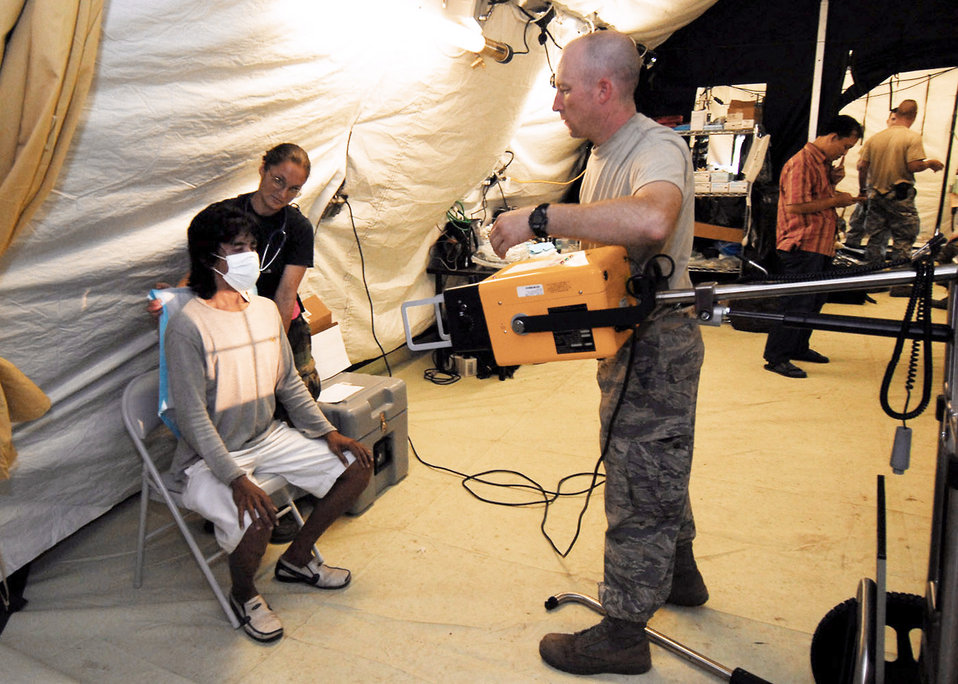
HARRT arrives in Indonesia

Air Force humanitarian assistance rapid response team members Tech. Sgt. China Mills (left) and Staff Sgt. Clifford Gentry x-ray a man's chest Oct. 7, 2009, in Padang, Indonesia. The HARRT has set up a mobile field hospital to provide medical care to those injured by the recent earthquakes in Indonesia. Sergeant Mills is an individual duty medical technician from the 374th Surgical Operations Squadron at Yokota Air Base, Japan. Sergeant Gentry is a medical technician from the 36th Medical Operations Squadron at Andersen Air Force Base, Guam.